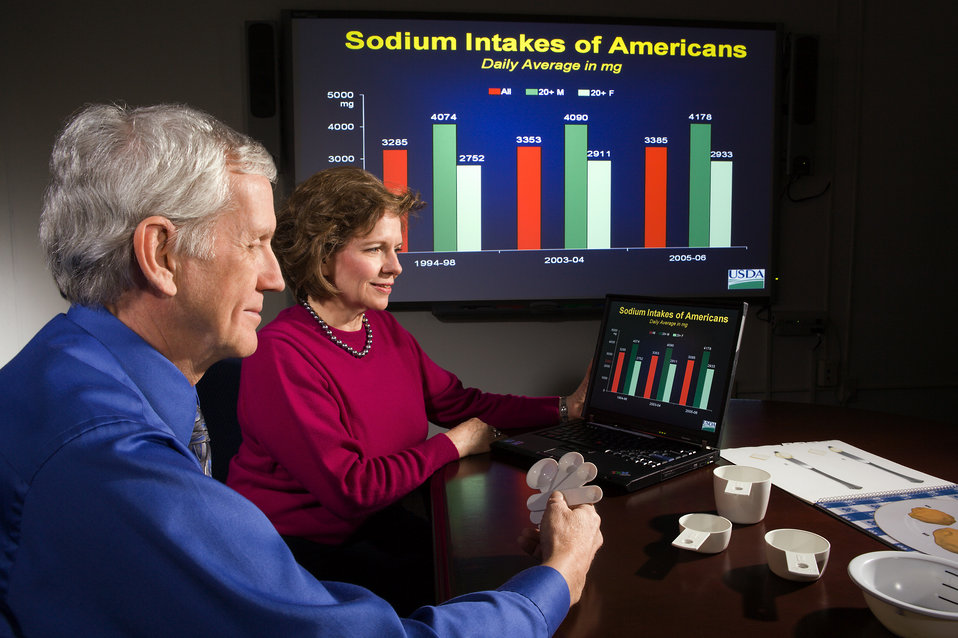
Department of Health and Human Services (DHHS) Centers for Disease Control and Prevention National Health and Nutrition Examination Survey (NHANES) Program director Clifford Johnson and U.S. Department of Agriculture (USDA) Agricultural Research Service (ARS) Food Surveys Research Group, Beltsville Human Nutrition Research Center leader Alanna Moshfegh review sodium intake data from “What We Eat in America,” the dietary intake component of the National Health and Nutrition Examination Survey on Jan. 16, 2009.USDA photo by Peggy Greb.